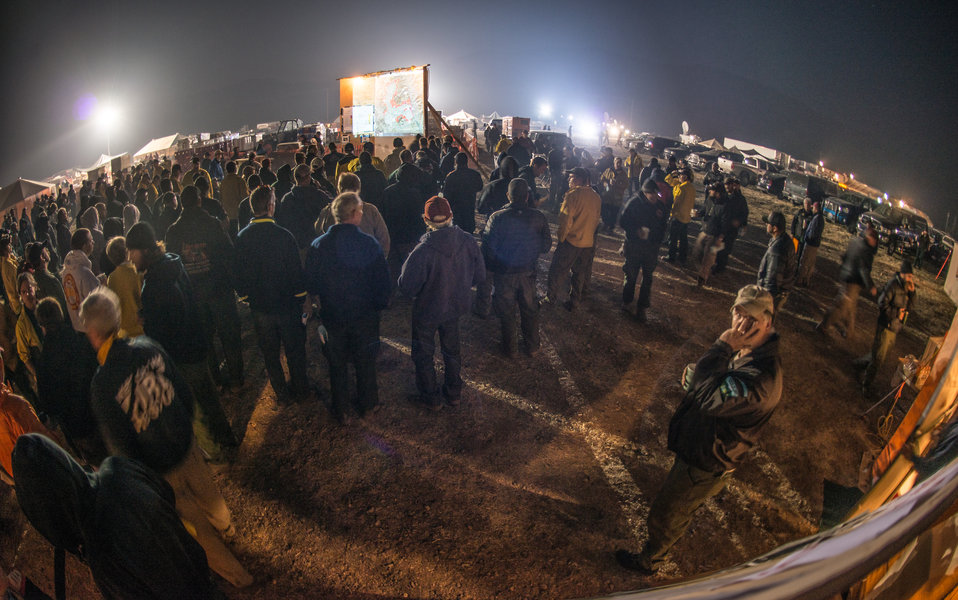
Leadership and crews migrate from the food service tents, many with coffee in their hands, to the briefing area in front of the Incident Command Post tents, to begin their 12-hour work day with the Morning Briefing, at the Beaver Creek Fire, west of Hailey, ID, at 6 AM, on Tuesday, Aug 20, 2013. The morning winds have brought the fire's smoke into the camp.